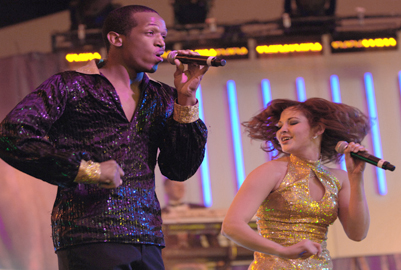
Tops In Blue vocalists Senior Airman Quentin Thomas and 2nd Lt. Rhoda Lazo perform before a large crowd Feb. 11, 2009, in Las Vegas. Tops In Blue, the Air Force's expeditionary entertainment unit, is scheduled to perform